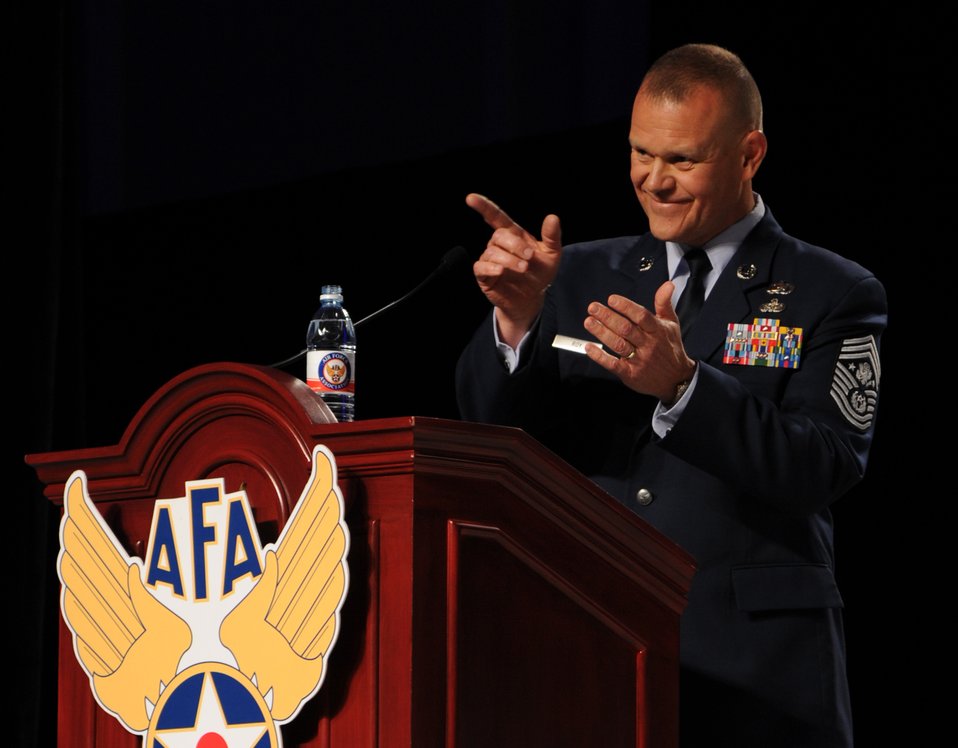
12 Outstanding Airmen of the Year

Chief Master Sgt. of the Air Force James A. Roy speaks during a banquet for the 12 Outstanding Airmen of the Year at the 2012 Air Force Association’s Air and Space Conference and Technology Exposition in Washington, D.C., Sept. 17, 2012. Roy represents the highest enlisted level of leadership and, as such, provides direction for the enlisted force and represents their interests.